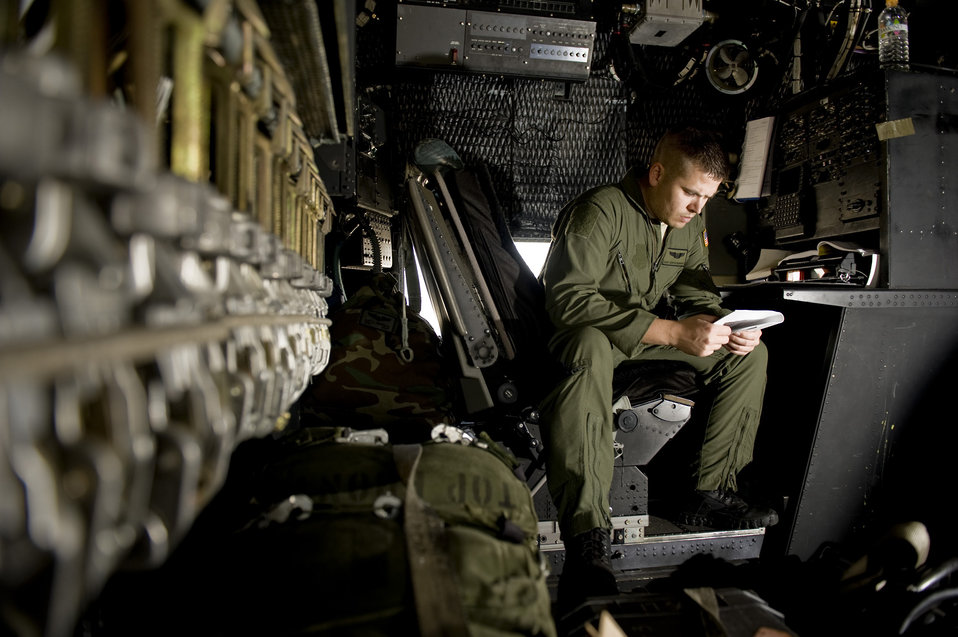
Standing up at Sendai airport

Staff Sgt. Curtis Hornbeak reviews a flight-operations guide prior to flying supplies to Sendai Airport March 16, 2011, at Yokota Air Base, Japan. The crew brought water, food, fuel and other general supplies to 353rd Special Operations Group members who are conducting search and rescue missions from the airport. The Airmen are establishing a usable runway at Sendai Airport to help with Japan's earthquake and tsunami relief.